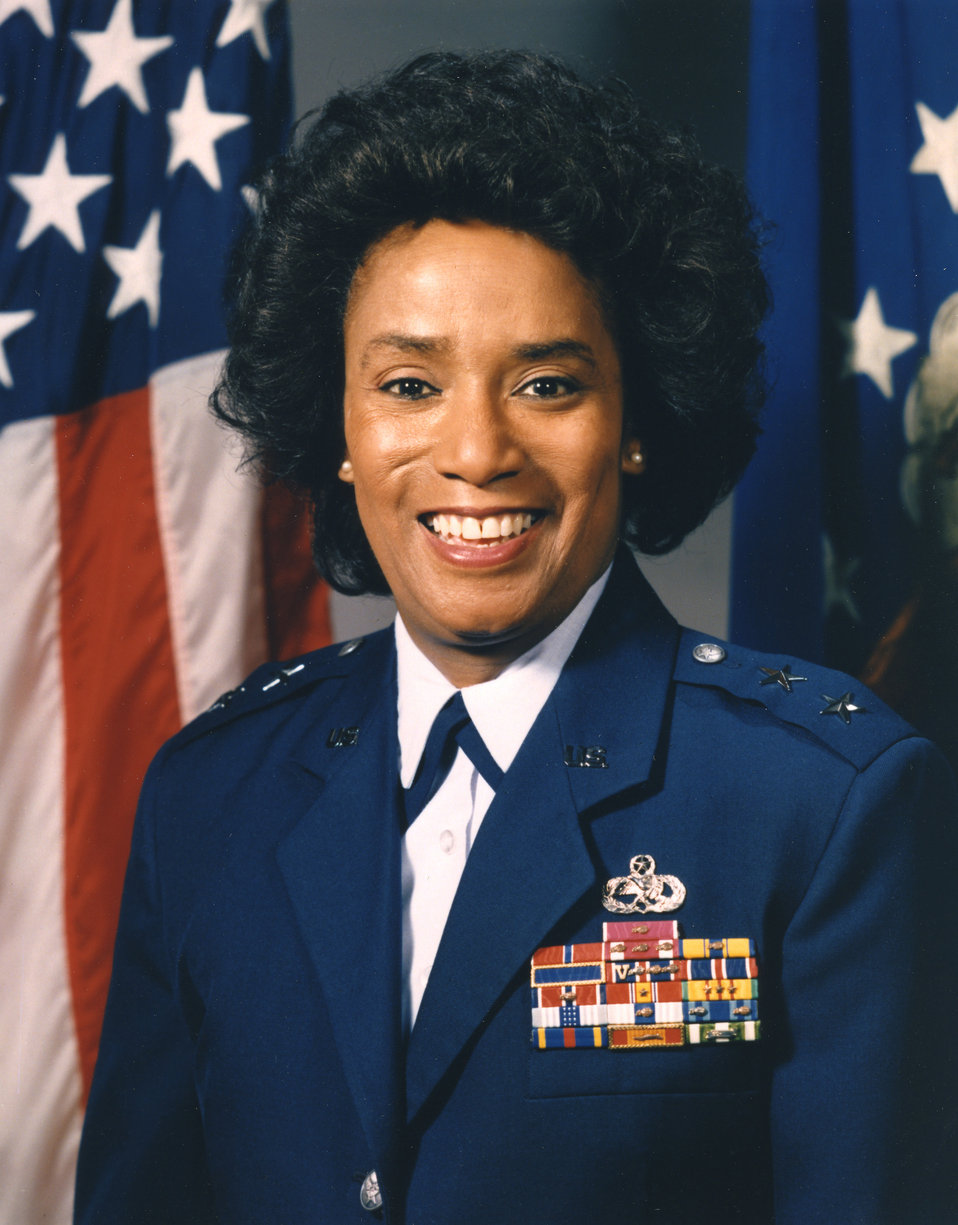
Maj. Gen. Marcelite Harris, the Air Force's first African-American female general.